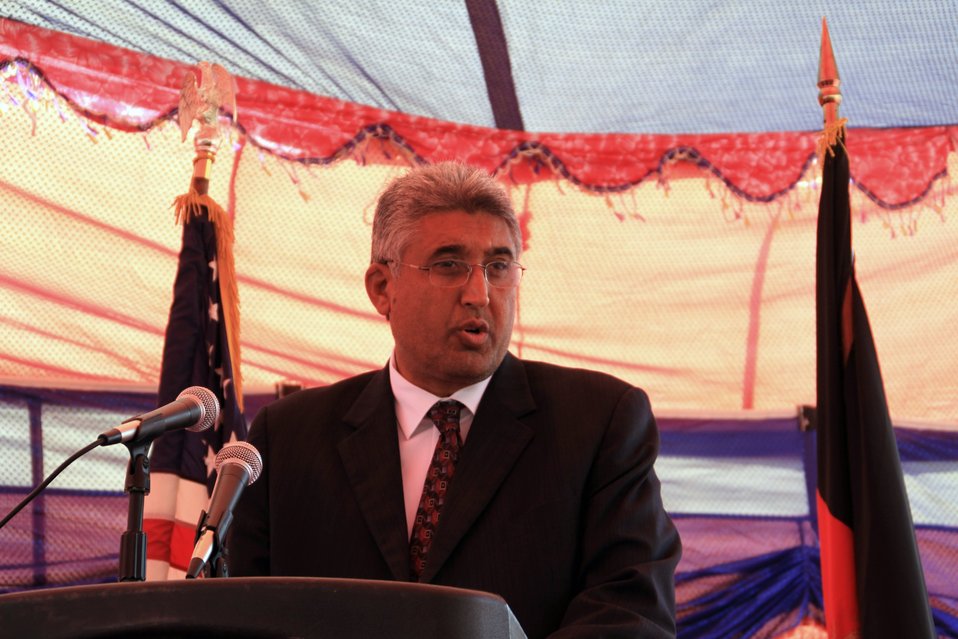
Baddam Bagh Farm